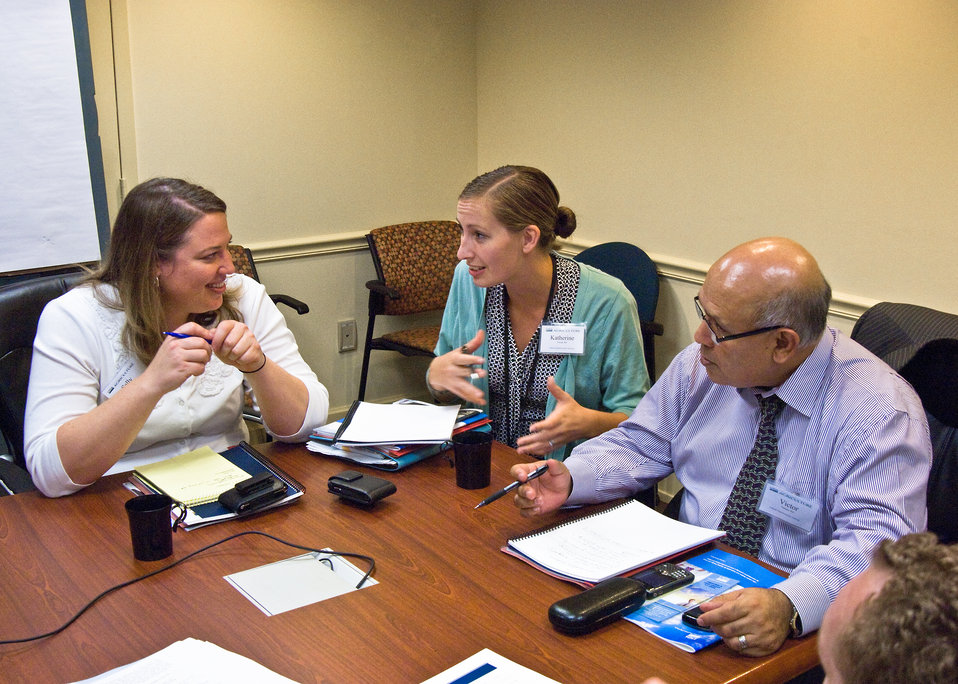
Sally Cluthe, Office of the Secretary, Katherine Yocum, Rural Development, Rural Utilities Service and Victor Vasquez, Deputy Undersecretary, Rural Development discuss a project during a break-out session of the Department of Agriculture, Secretary's Transformational Training in Washington, DC, Wednesday, September 15, 2010. Agriculture Secretary Tom Vilsack is quoted in the training material, “Our senior leaders are responsible for leading change and must be committed to achieving a cultural transformation of USDA.” USDA Photo 10di1492-35 by Bob Nichols.